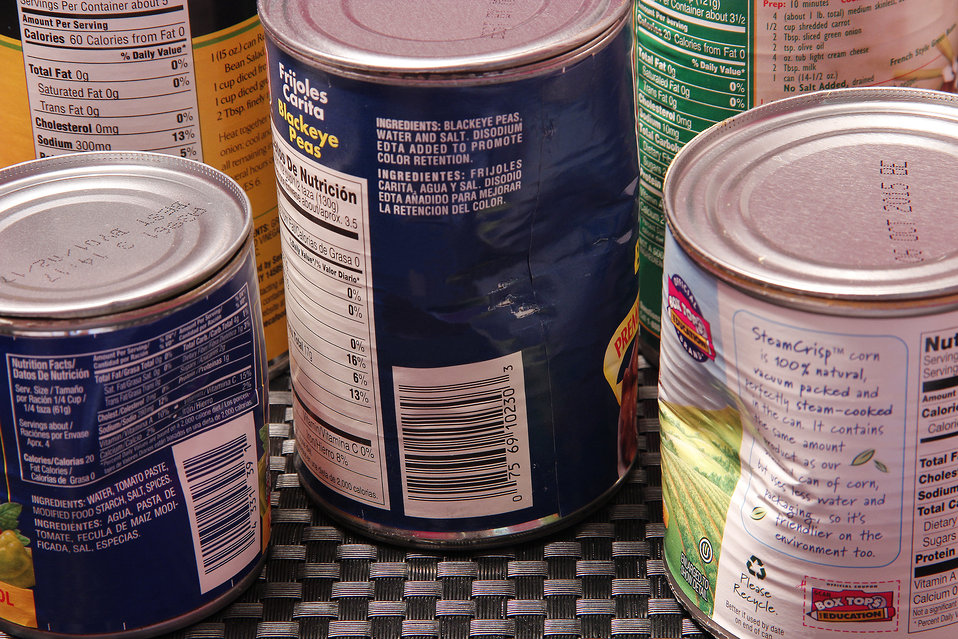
Depicted here, are five cans of foods including tomato paste, blackeye peas, corn, and green beans. However, it is important to note that some of the cans were dented, which should raise concern for consumers as to the safety of the contents, and whether these foods should be eaten.